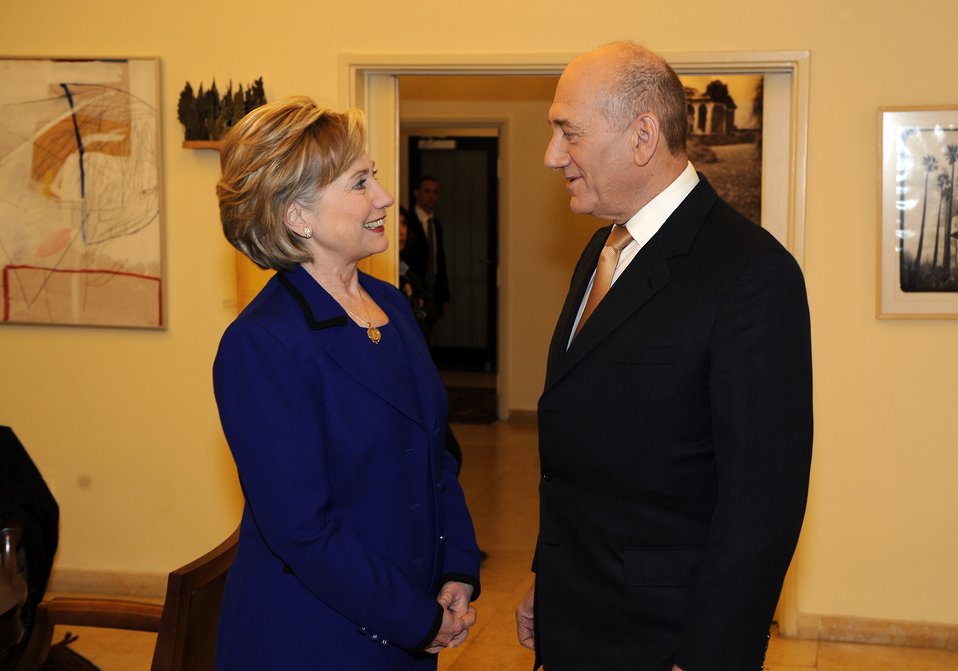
Secretary Clinton Visits Israeli Prime Minister Residence

U.S. Secretary of State Hillary Rodham Clinton during visit to Prime Minister Ehud Olmert's Residence, Jerusalem, March 3, 2009.